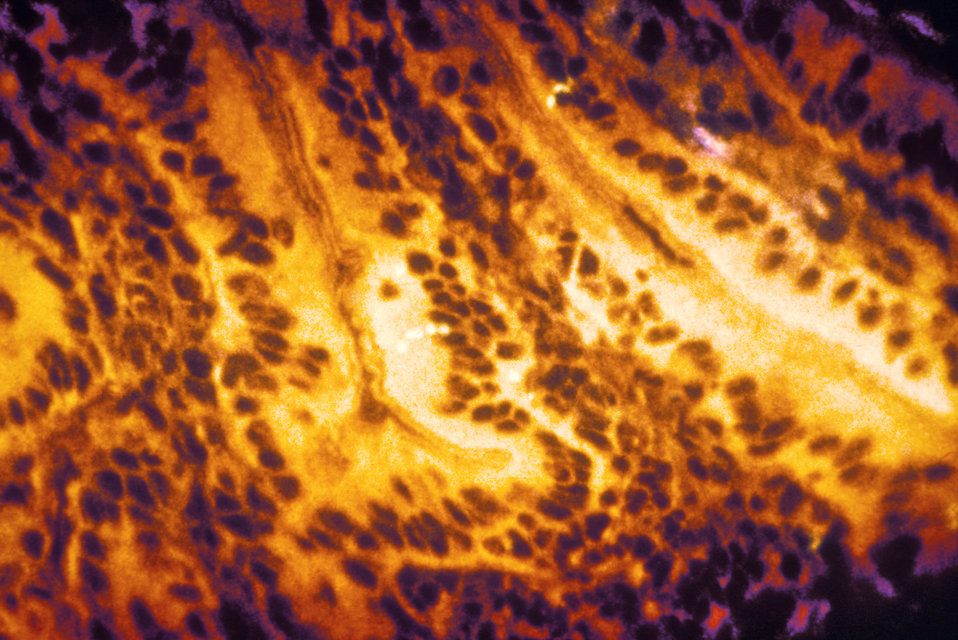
This micrograph reveals some of the histopathologic changes found in an intestinal tissue specimen indicative of first-stage shigellosis. At this point in the pathogenesis, the Shigella sp. bacteria had only just begun to penetrate the intestinal mucosal lining. See PHIL 15088, where you'll note the frank loss of normal simple columnar cytoarchitectural patency in late-stage shigellosis.